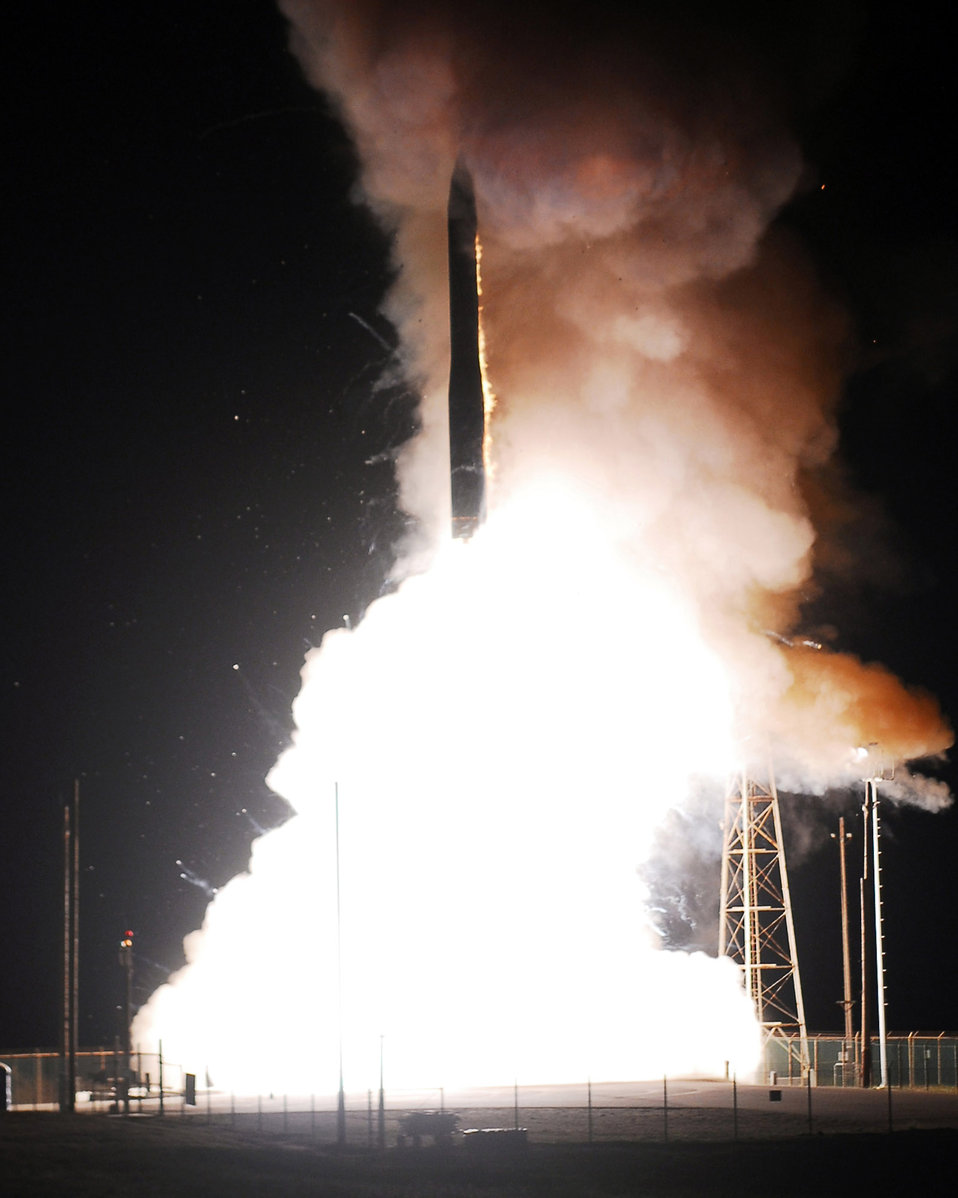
Vandenberg officials launch Minuteman III missile

A Minuteman III intercontinental ballistic missile successfully launches at 1 a.m. Nov. 5 from Vandenberg Air Force Base, Calif. The missile was configured with a National Nuclear Security Administration test assembly in which a single unarmed re-entry vehicle traveled approximately 4,190 miles to their pre-determined targets near the Kwajalein Atoll in the Marshall Islands.